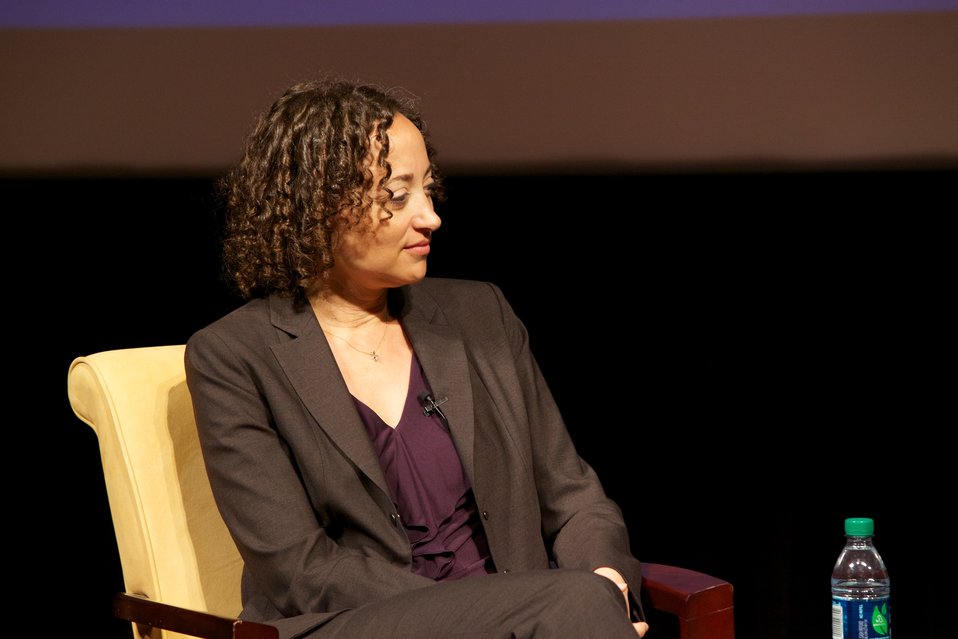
Brown at 60: Is Full Equality Within Our Grasp? A Conversation on Zero Tolerance, Segregation, and the Promise of Justice